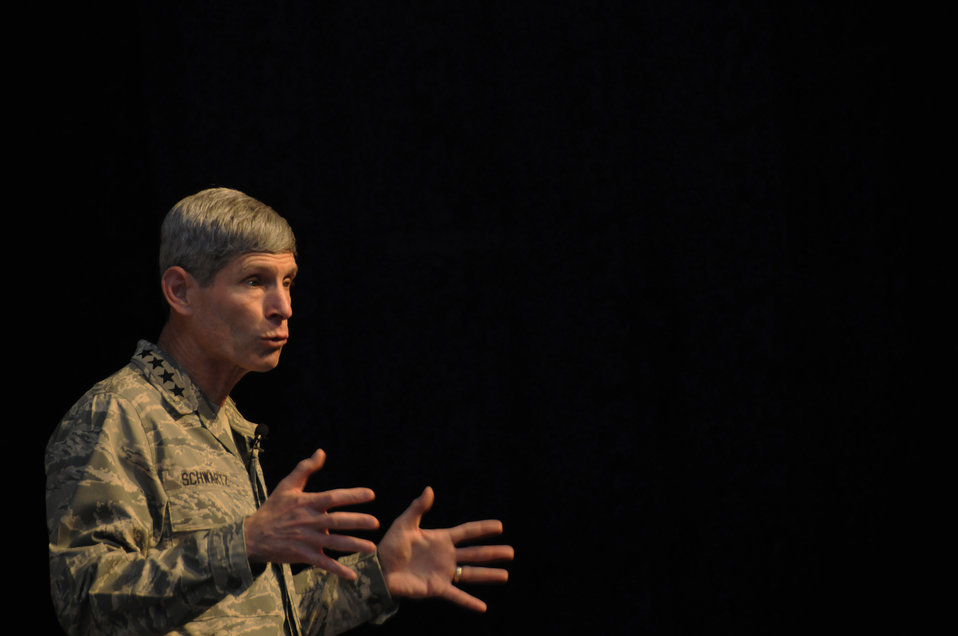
CSAF visits Southwest Asia

Air Force Chief of Staff Gen. Norton Schwartz speaks to an assembly of Airmen gathered from the 379th Air Expeditionary Wing Oct. 20. More than 500 Airmen attended the assembly. The visit marked the CSAF's first trip to the U.S. Air Forces Central area of responsibility since his appointment as the Air Force chief of staff.